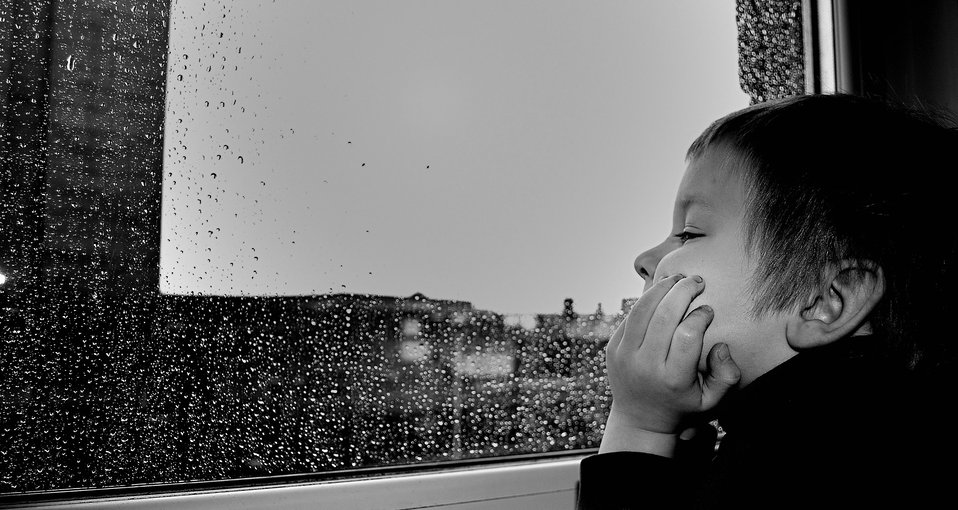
When it rains.